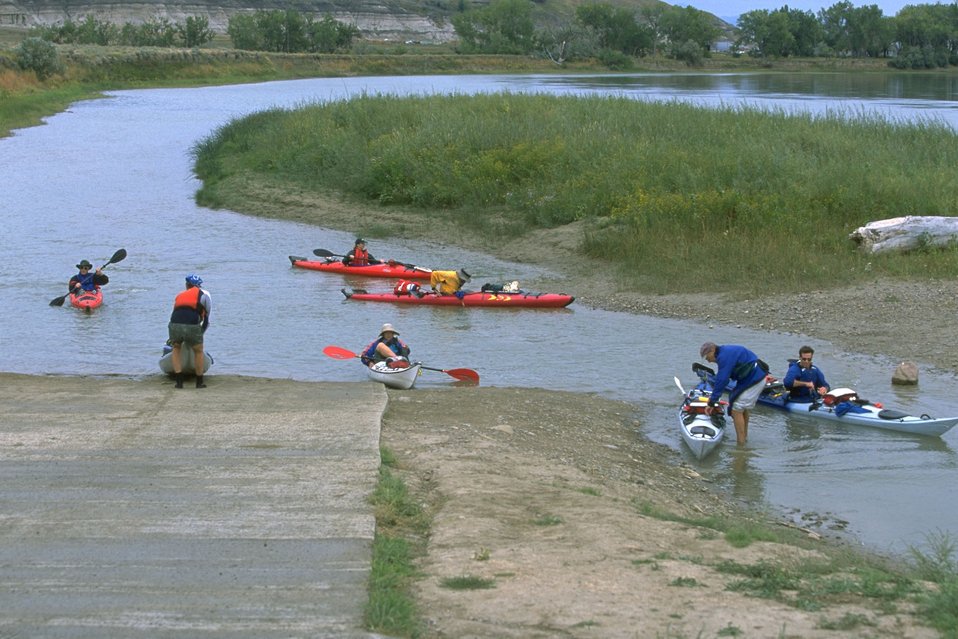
Floating the Upper Missouri River